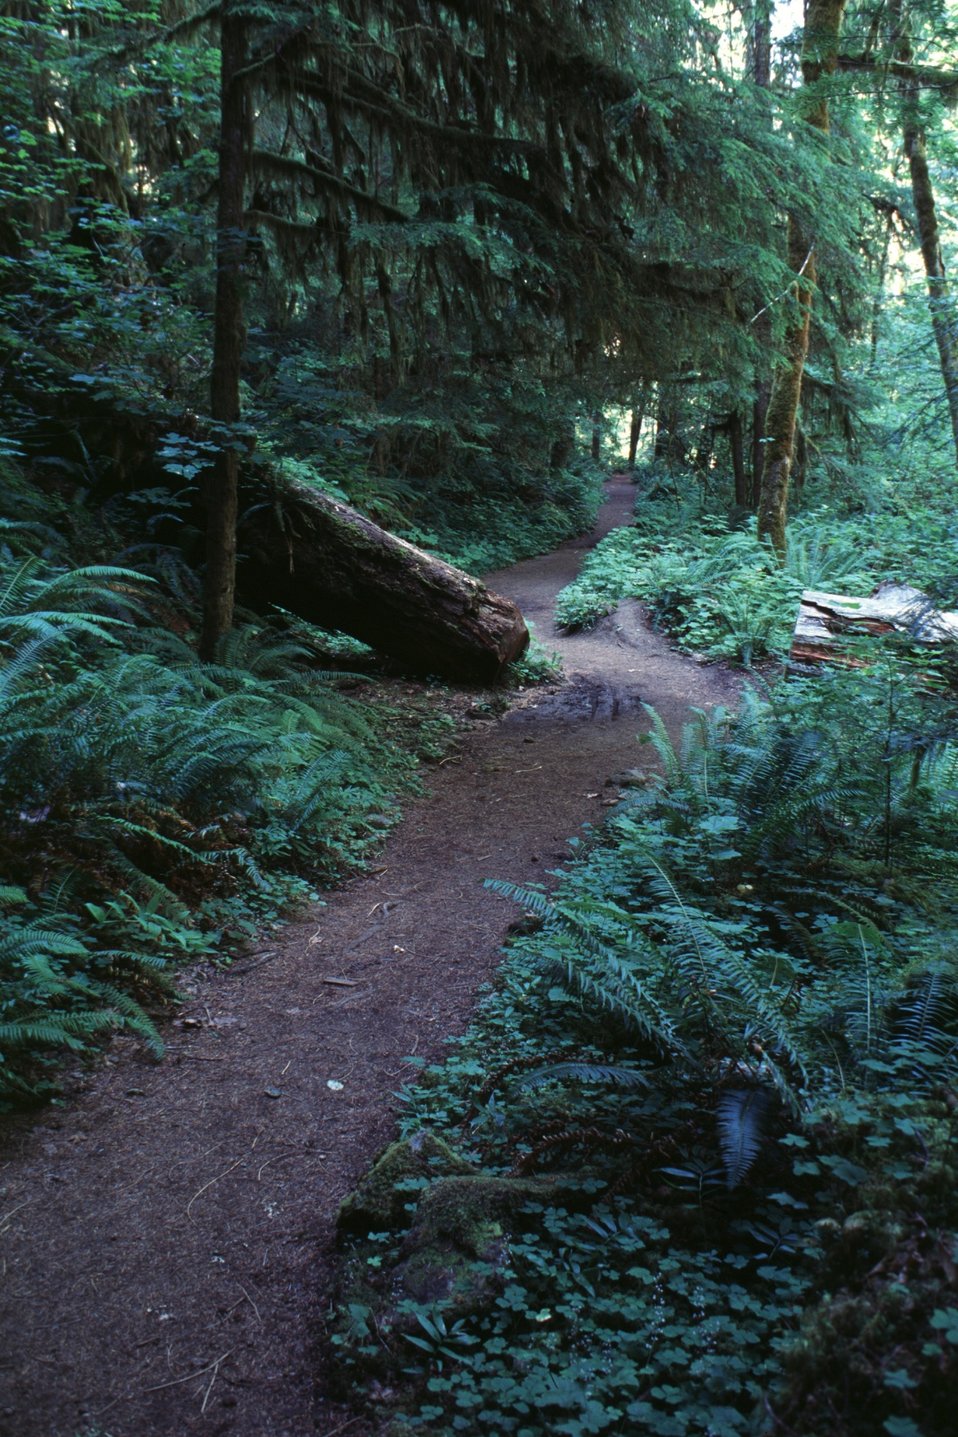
Wolf Creek Falls Trail.